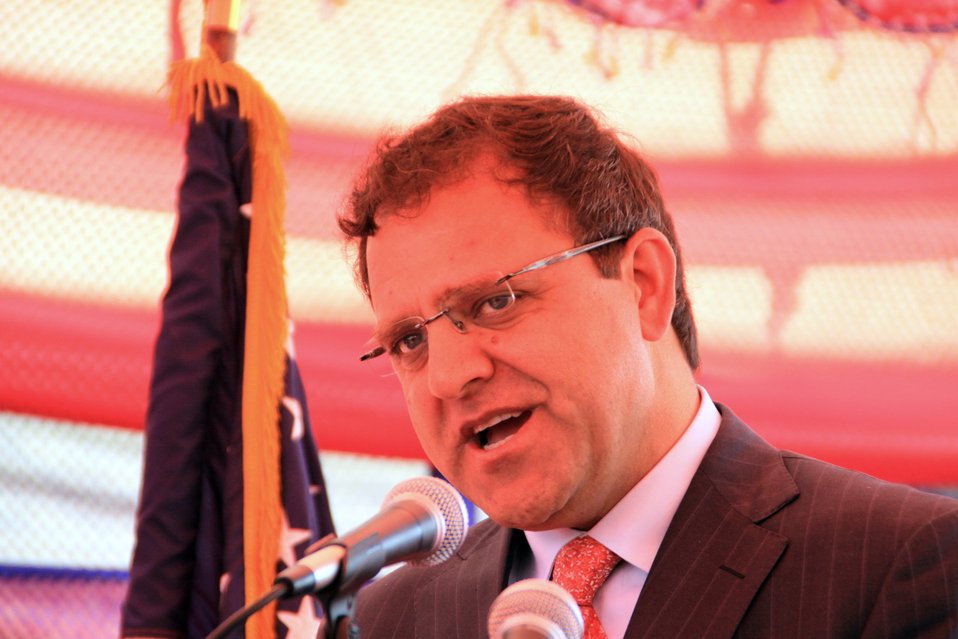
Baddam Bagh Farm